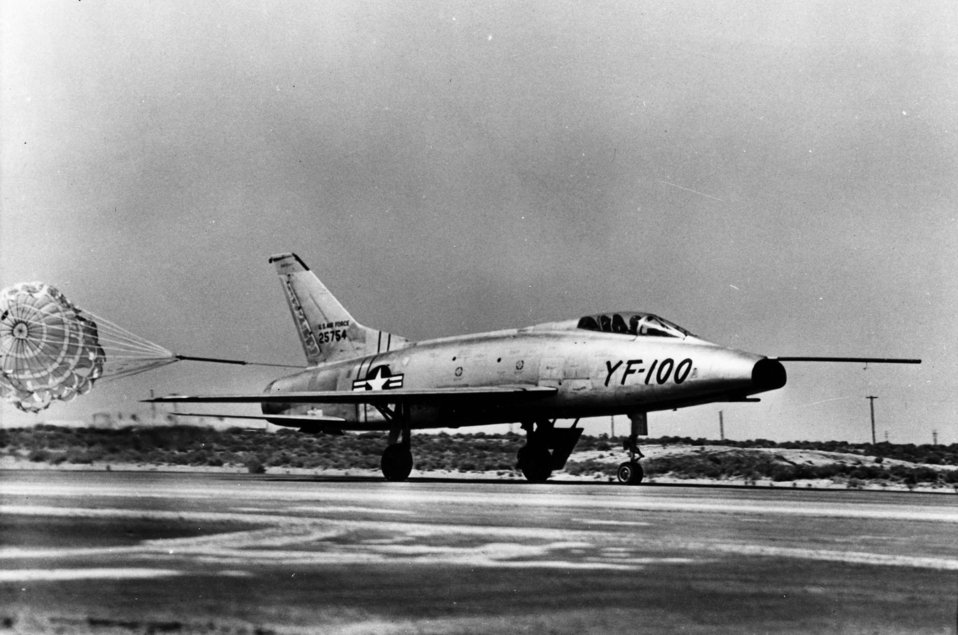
North American YF-100

The first North American YF-100 built with the serial number 52-5754 lands with drag chute.